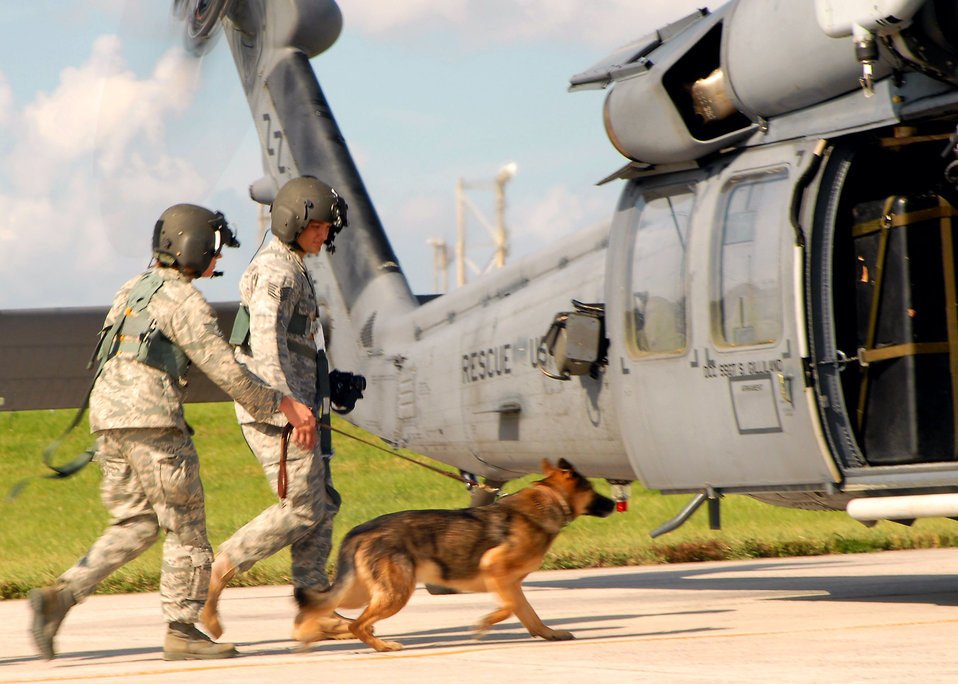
Kadena's K-9 warriors go airborne

Staff Sgt. Sarah Merklinger restrains Bojar, a military working dog, on their way to board an HH-60 Pavehawk helicopter at Kadena Air Base, Japan, July 14. Kadena's working dogs participated in familiarization training to get used to the loud noise from helicopters and disturbances associated with flying during deployments. Sergeant Merklinger is a dog handler from the 18th Security Forces Squadron,.